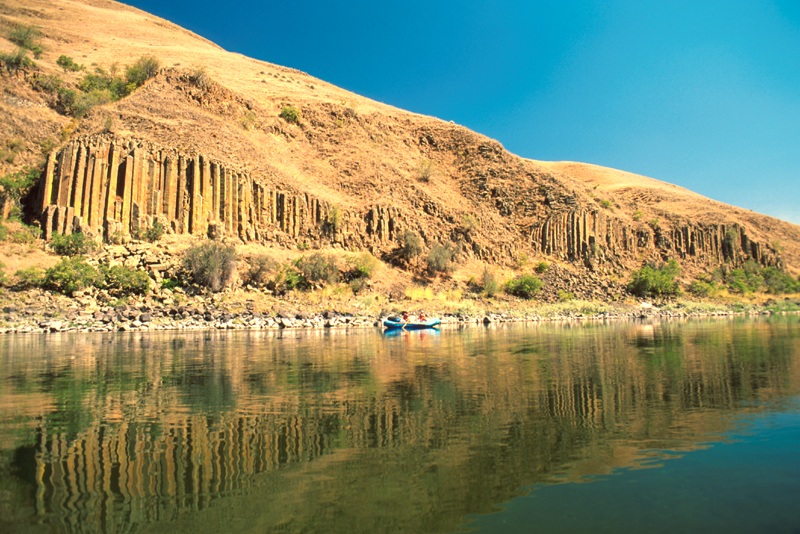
Rafting Lower Salmon River Cottonwood Field Office UCSC Upper Columbia-Salmon Clearwater District